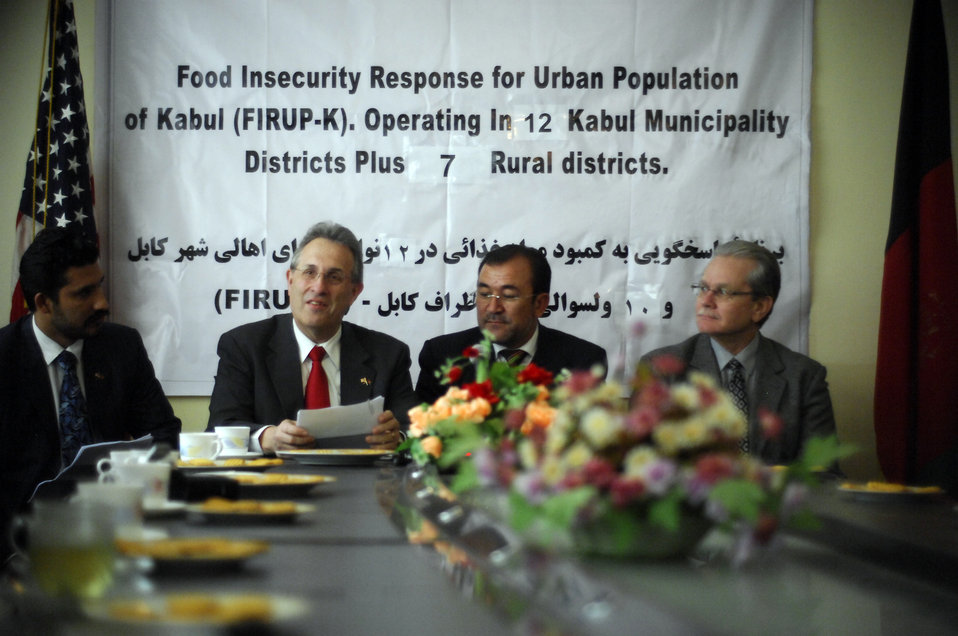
Care89 (1)